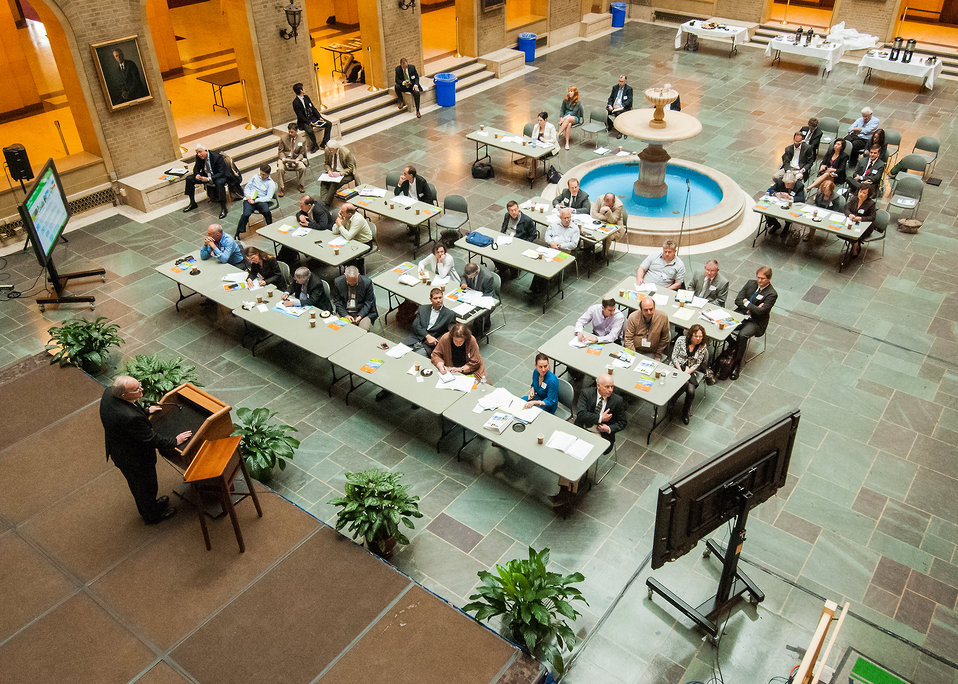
Department of Energy (DOE) Energy, Efficiency and Renewable Energy John Carroll explains the Biomass and Algae Programs and program goals of the DOE at the U.S.-Israel Bio-Challenge Symposium at the U.S. Department of Agriculture (USDA) in Washington, D.C. on Thursday, Apr. 18, 2013.